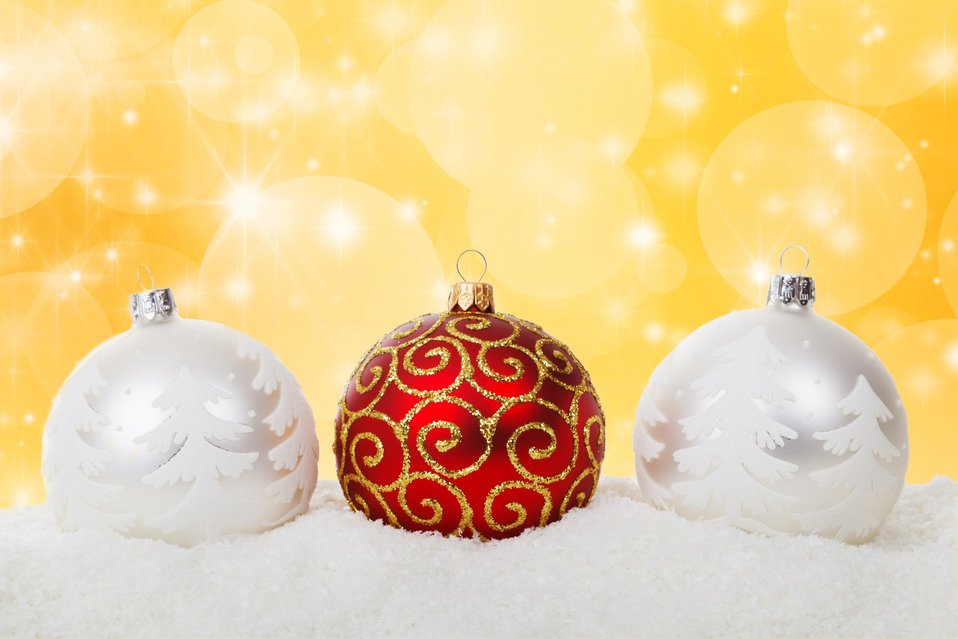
Christmas balls in snow

Red and white christmas baubles in snow on golden background.